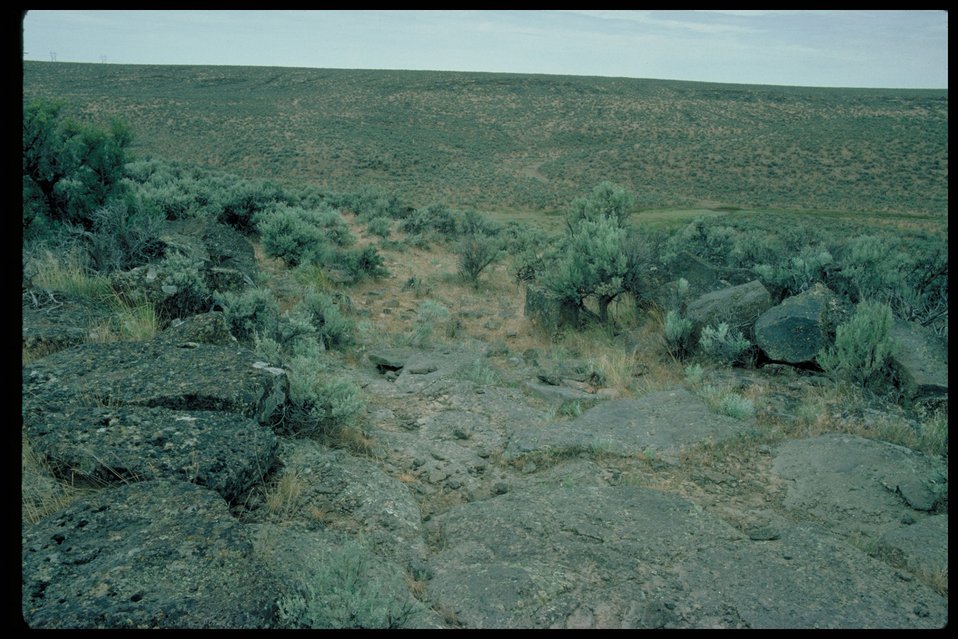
Oregon Trail at Alkali Creek Lower Snake River District